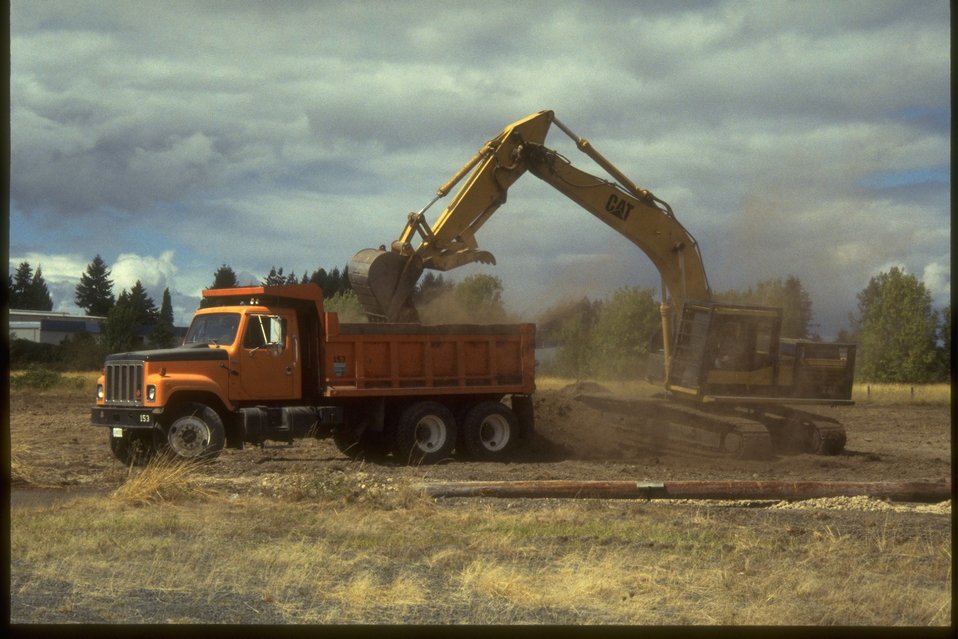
Road maintenance crew at work.